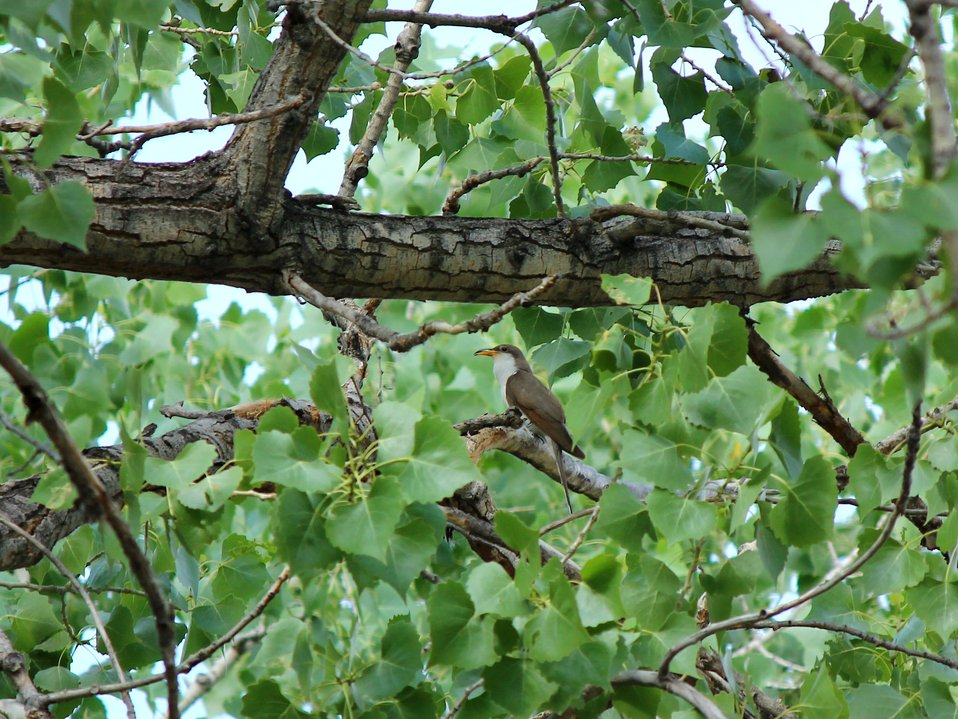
Western yellow-billed cuckoo

Yellow-billed cuckoo. Grand Junction Wildlife Area along Gunnison River. Creed Clayton / USFWS.